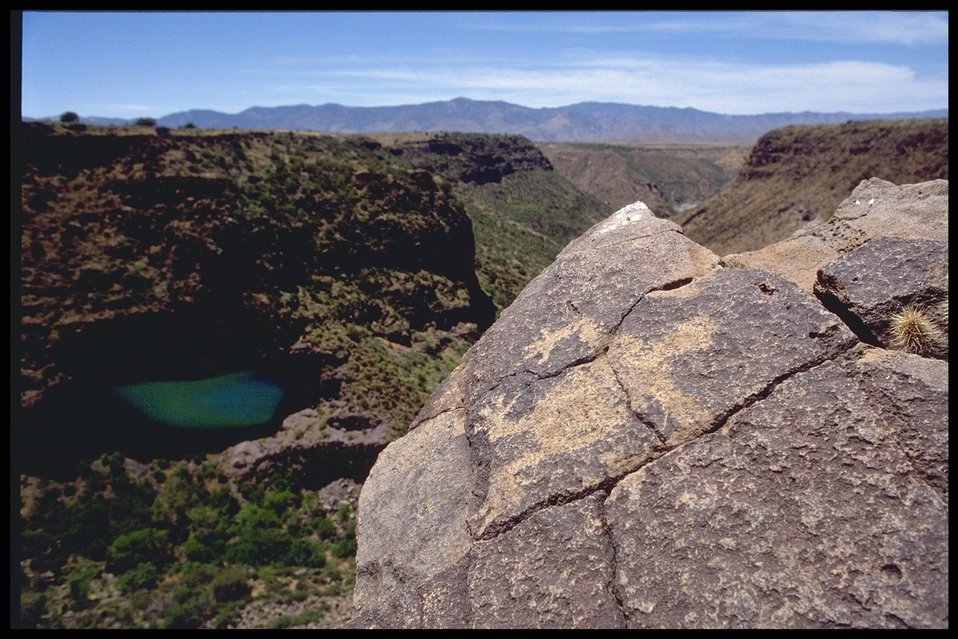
A Petroglyph (Rock Art) is shown with the blue Arizona sky hanging over the 71,000 acre Agua Fria National Monument in the Background.